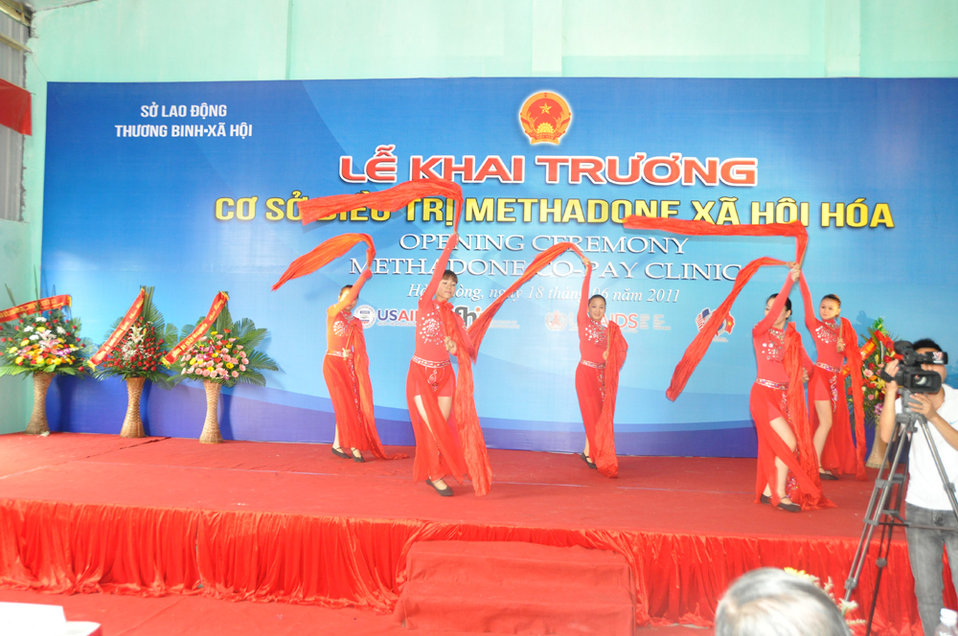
Co-pay Methadone Treatment Center Opens in Hai Phong on June 18, 2011